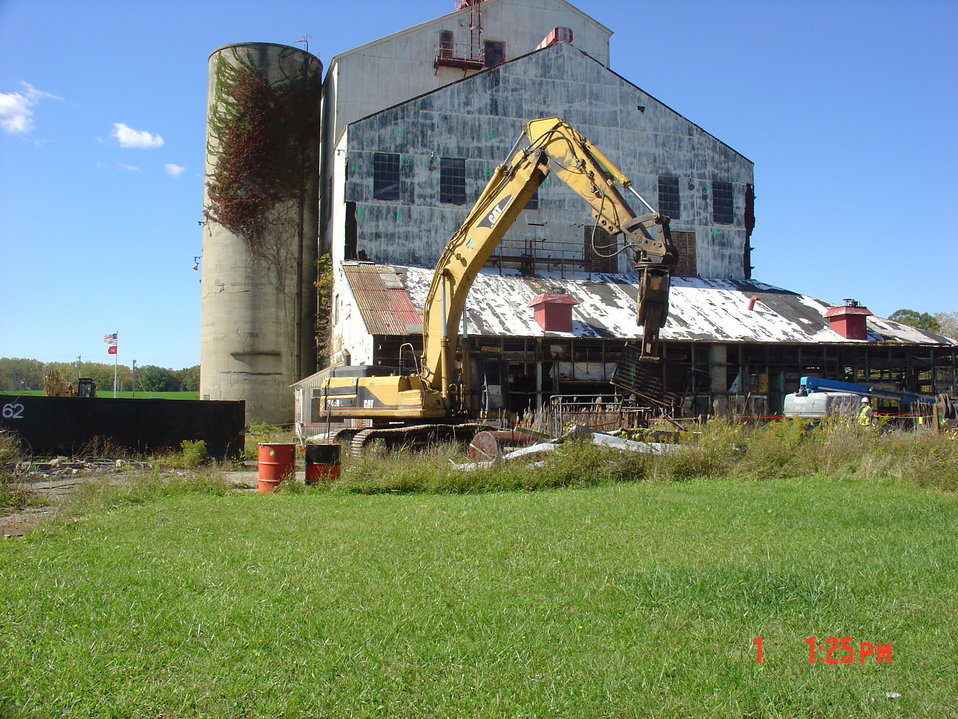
BLDG 401 GRIP REMOVING SIDING.

Activities from the Niagara Falls Storage Site, which is associated with the former Lake Ontario Ordnance Works. Formerly Utilized Sites Remedial Action Program (FUSRAP), a program initiated in 1974 to identify, investigate and clean up or control sites that were part of the Nation's early atomic energy and weapons program. Activities at the sites that are eligible for FUSRAP were conducted by Manhattan Engineer District (MED) or the Atomic Energy Commission (AEC), both predecessors of the Department of Energy (DOE). The U.S. Army Corps of Engineers was assigned management of FUSRAP by Congress in 1997.